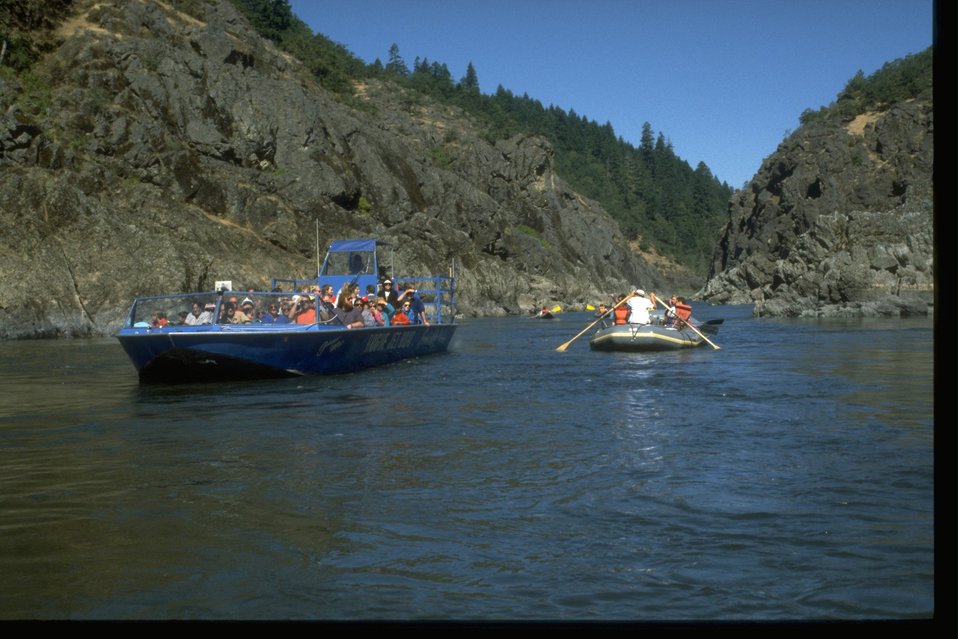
Large tourist jet boat and rafts in the Rogue River Hellgate Canyon.